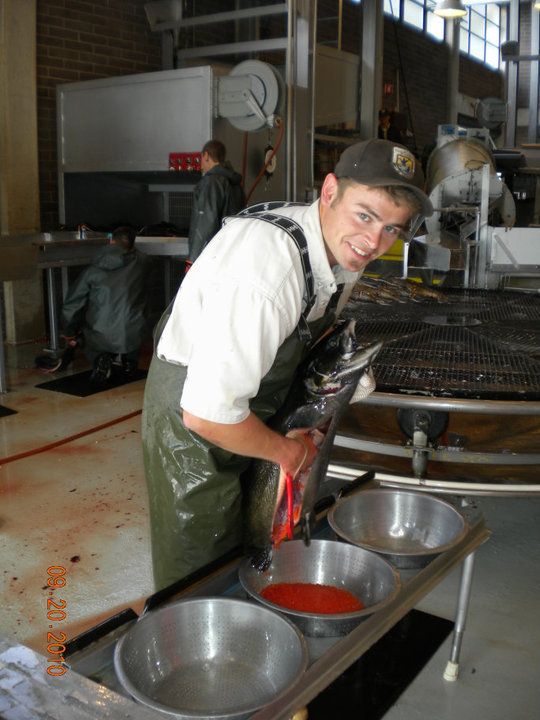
Collecting Fall Tule Chinook eggs - Spring Creek NFH